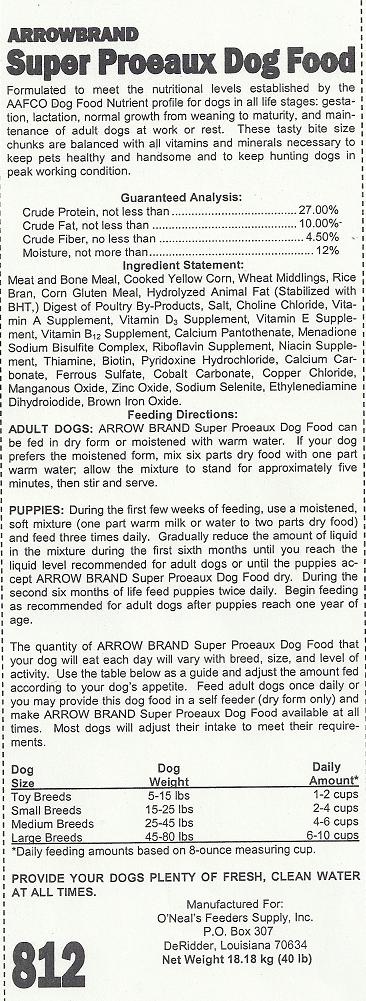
RECALLED - Dry dog food

December 13, 2011 - O’Neal’s Feeders Supply, Inc. Recalls Arrow Brand Dry Dog Food.